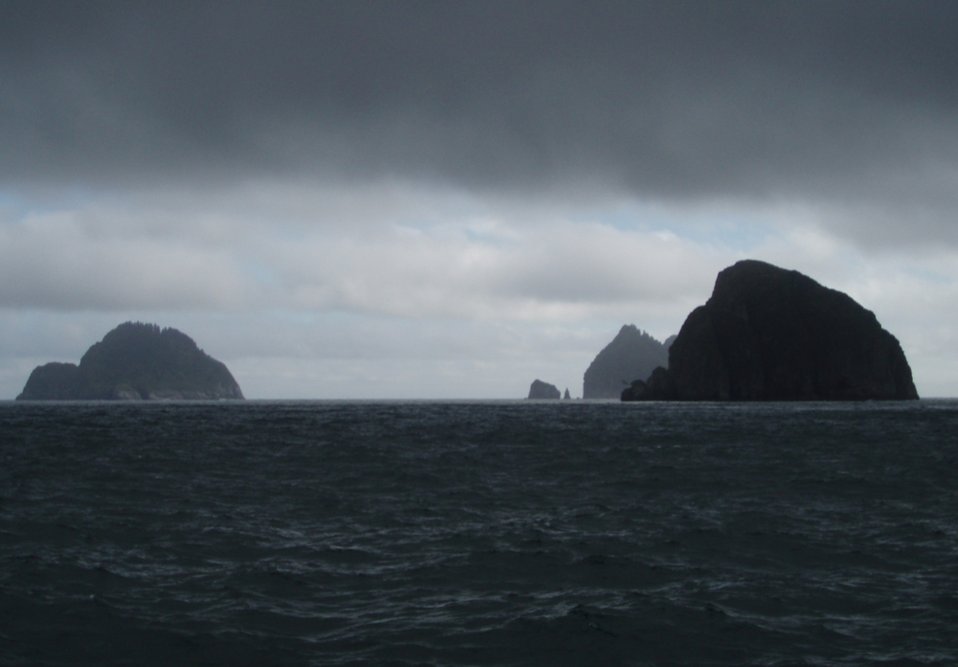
A stormy day on the Gulf of Alaska